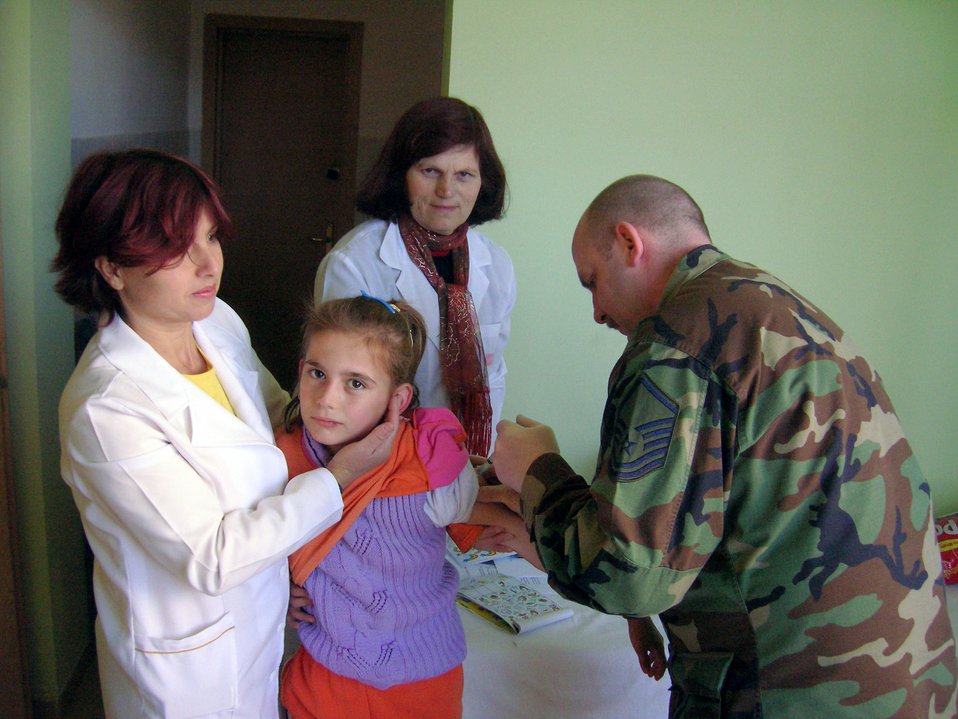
Medics provide humanitarian support in Albania

Master Sgt. James Welch immunizes a girl as Albanian nurses provide assistance in February in Albania. Sergeant Welch, along with four other 109th Airlift Wing medics from the Stratton Air National Guard Base in New York, administered 1,000 Hepatitis A shots during a humanitarian mission with the New Jersey National Guard.